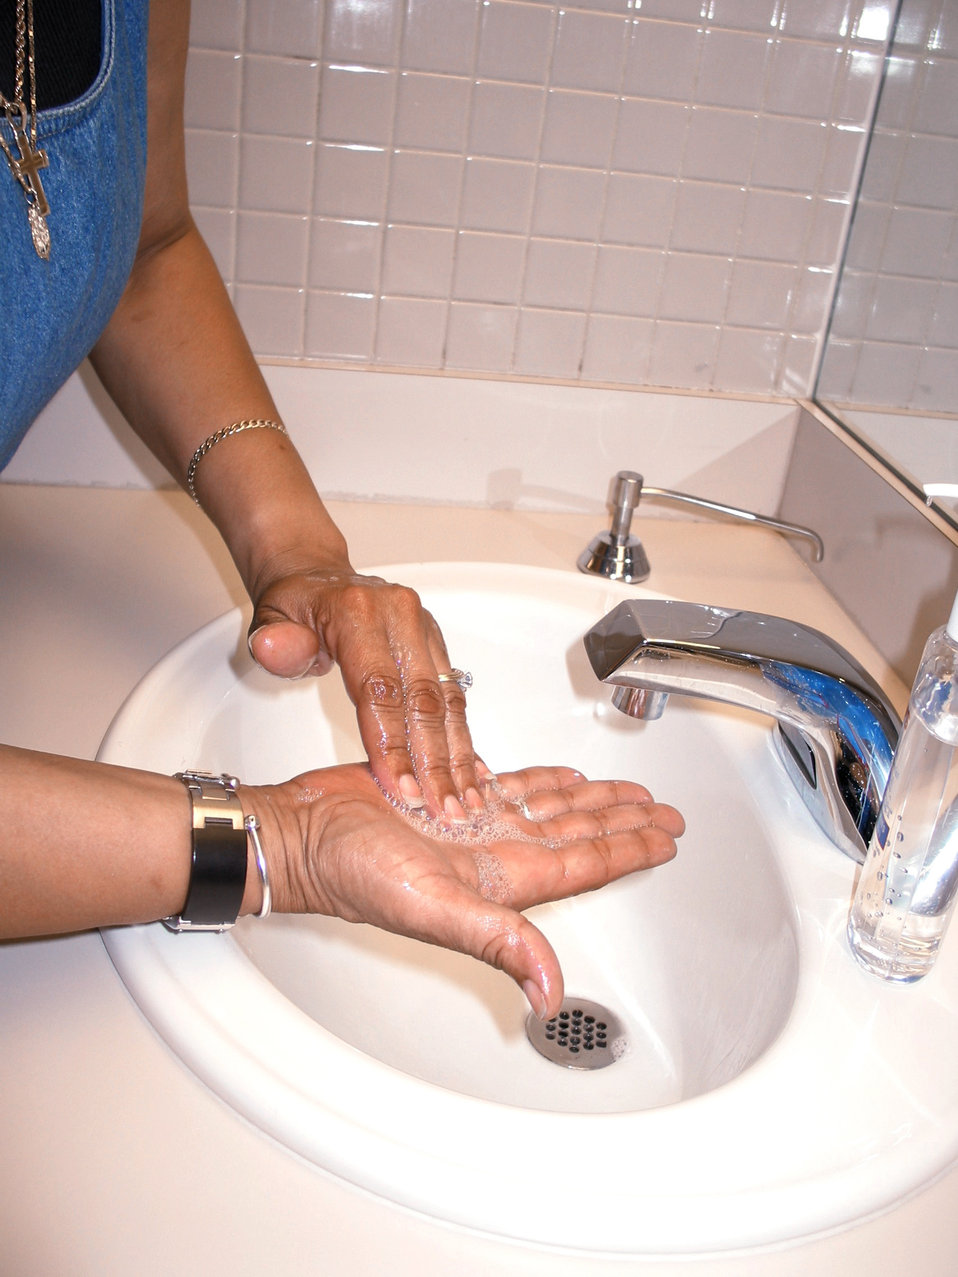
This image demonstrates how a smallpox vaccinee washes her hands after handling her vaccination site bandage.